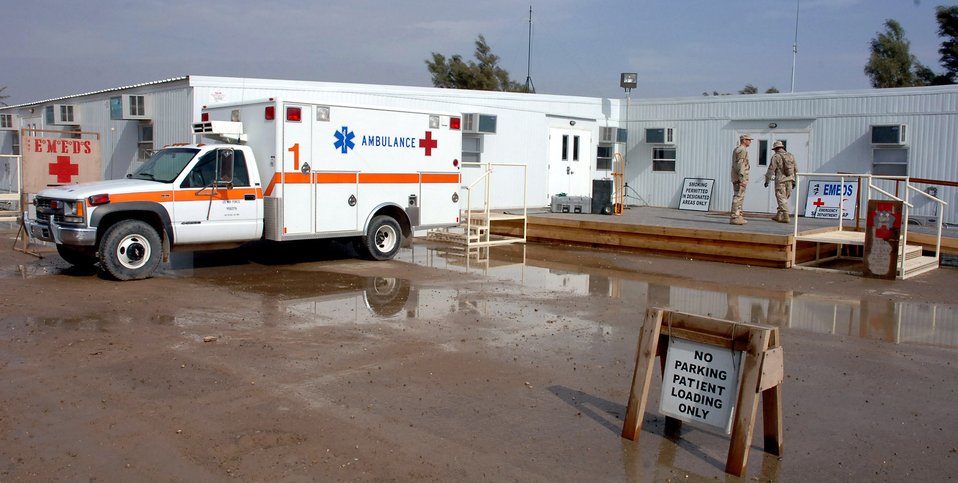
Medics leave dust behind

SATHER AIR BASE, Iraq (AFPN) -- The 447th Expeditionary Medical Squadron recently moved from old temper tents to a new 15,000-square foot modular clinic at Sather Air Base, Baghdad International Air Base, Iraq. The new clinic more than doubles the space available to the deployed medical team that provides primary and emergent medical care to Airmen at the air base and also to Department of Defense contractors, U.S. Army and Marines and Iraqi military forces based at the sprawling Victory Base Complex located at BIAP.